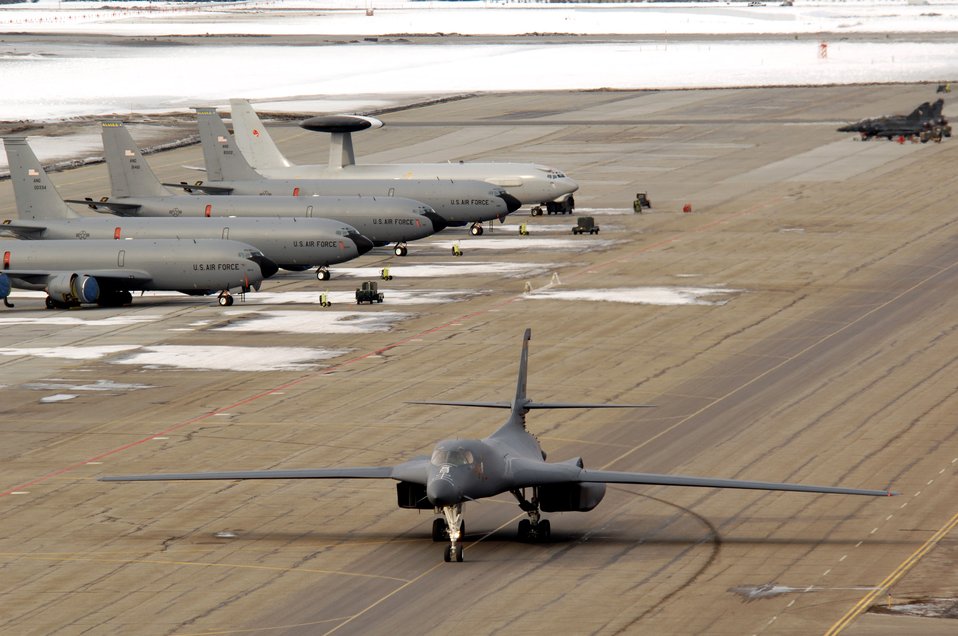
Red Flag-Alaska waves

A B-1B Lancer from Ellsworth Air Force Base, S.D., taxies on the flightline while other aircraft sit on the tarmac that will participate in Red Flag-Alaska 07-1 April 3 at Eielson AFB, Alaska. These exercises are conducted on the Pacific Alaskan Range Complex with air operations flown out of Eielson and Elmendorf Air Force bases in Alaska. For the exercise, units will be made up of Air Force, Navy, French and Australian military units and organized as an air expeditionary wing at Eielson AFB with a subordinate air expeditionary group at Elmendorf AFB.